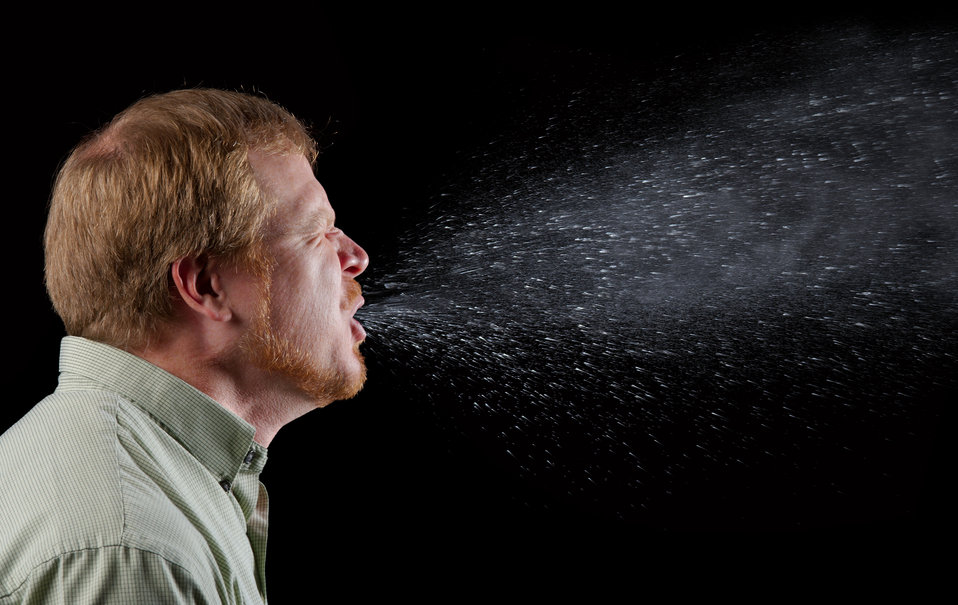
This 2009 photograph captured a sneeze in progress, revealing the plume of salivary droplets as they are expelled in a large cone-shaped array from this man's open mouth, thereby, dramatically illustrating the reason one needs to cover his/her mouth when coughing, or sneezing, in order to protect others from germ exposure.